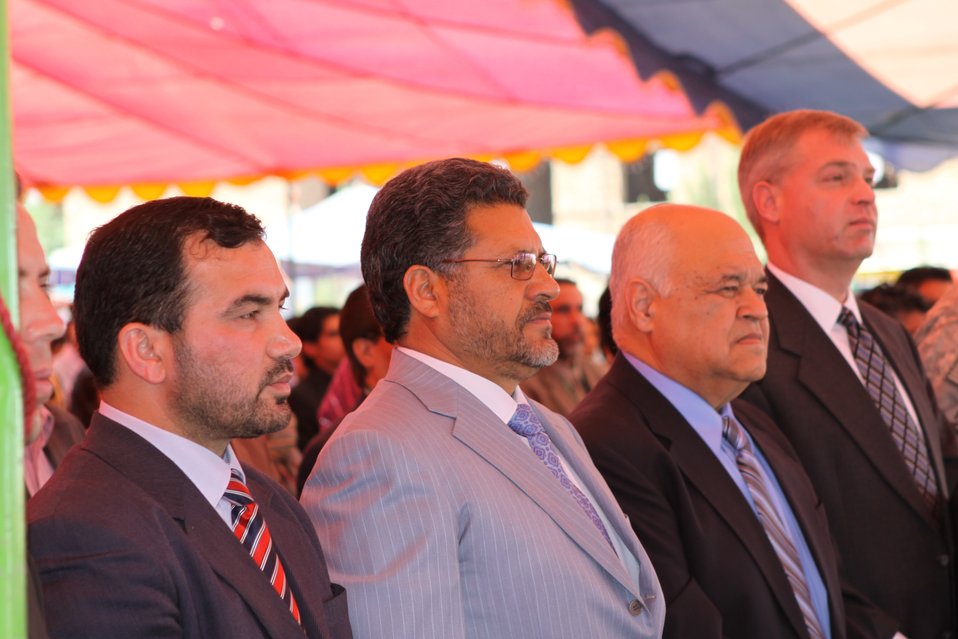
100522 ATVI Graduation 046